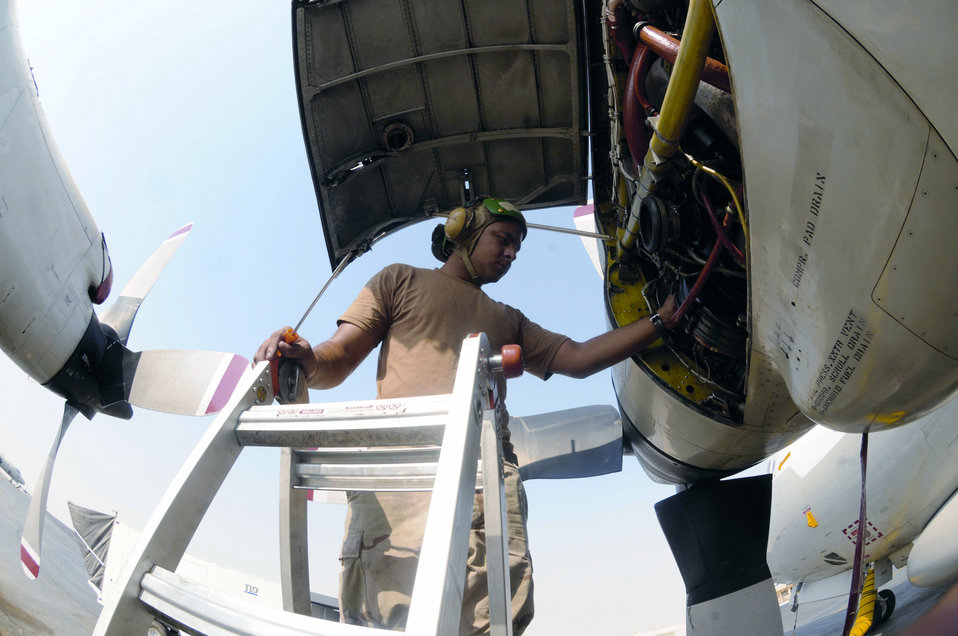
VP-46: GWOT Jack of all trades

Aviation Machinist Mate Airman Eric Dejesus tightens screws inside a P-3 Orion engine as part of the daily maintenance performed on the aircraft Oct. 27 at a base in Southwest Asia. These aviation machinists ensure the Orions are ready to fly and complete their missions in the war on terrorism. Airman Dejesus, a native of Orlando, Fla., is deployed from Naval Air Station Whidbey Island, Wash.